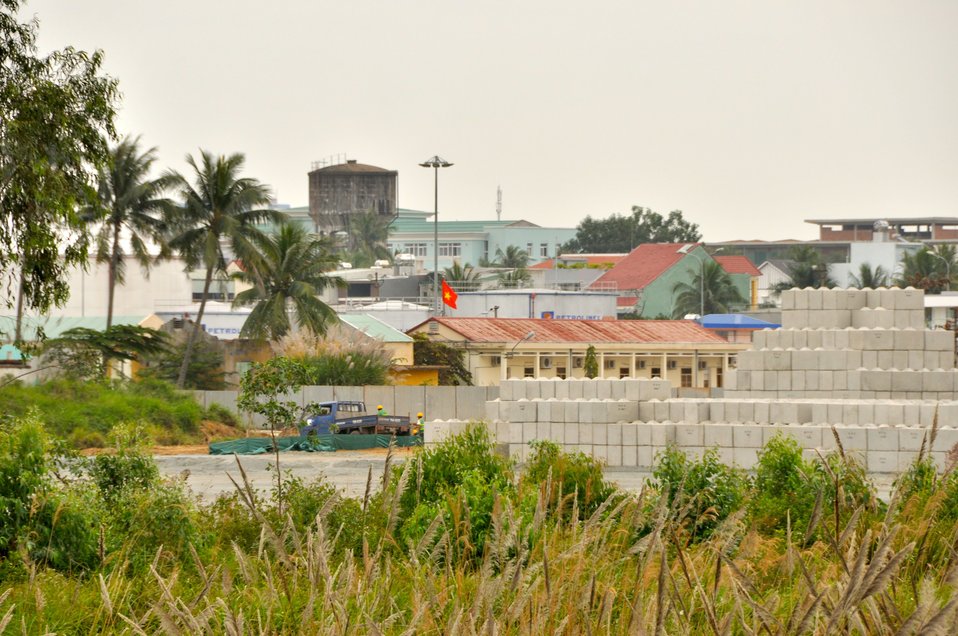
Site Preparation for Environmental Remediation of Dioxin Contamination at Danang Airport

Danang Airport, January 22, 2013